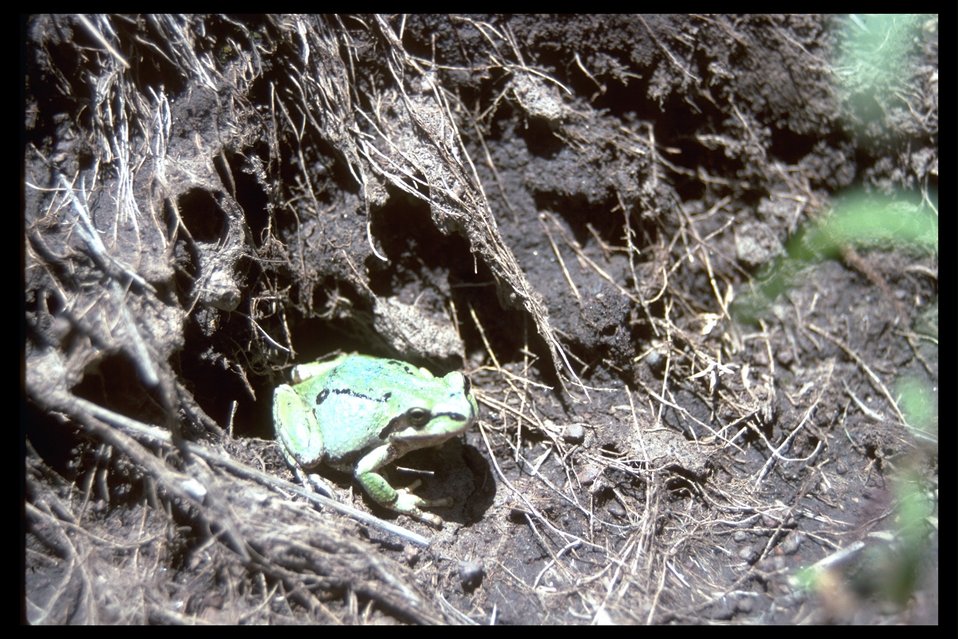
Green frog in a riparian area in the northern area of the Stonehouse WSA.